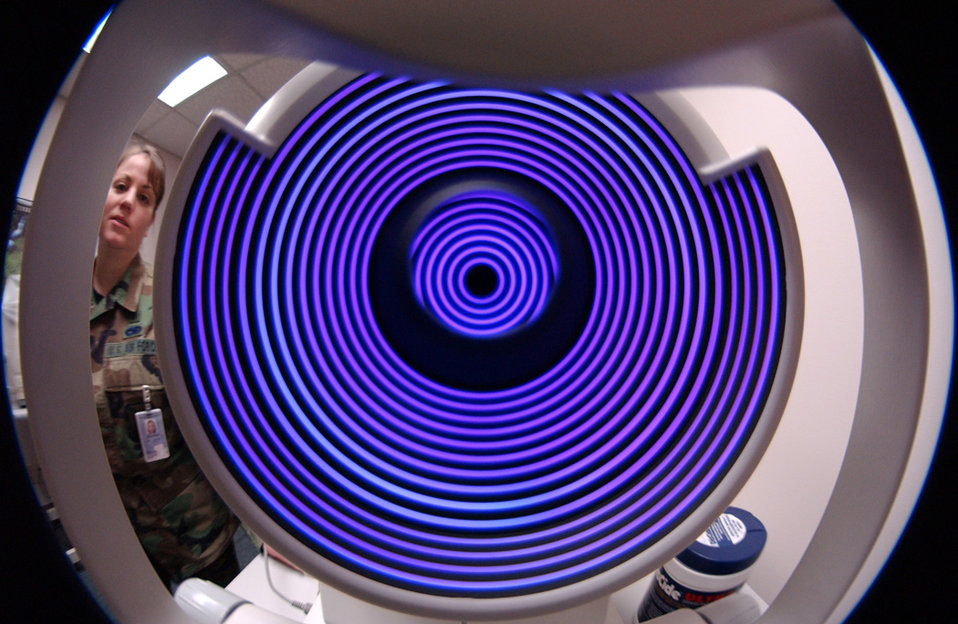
Easy on the eye

EIELSON AIR FORCE BASE, Alaska -- Staff Sgt. April Dickson operates a corneal topographer at the optometry clinic here March 30. The machine maps the shape of the cornea and is used for eye surgery pre-op. Sergeant Dickson is an optometry technician with the 354th Medical Group.